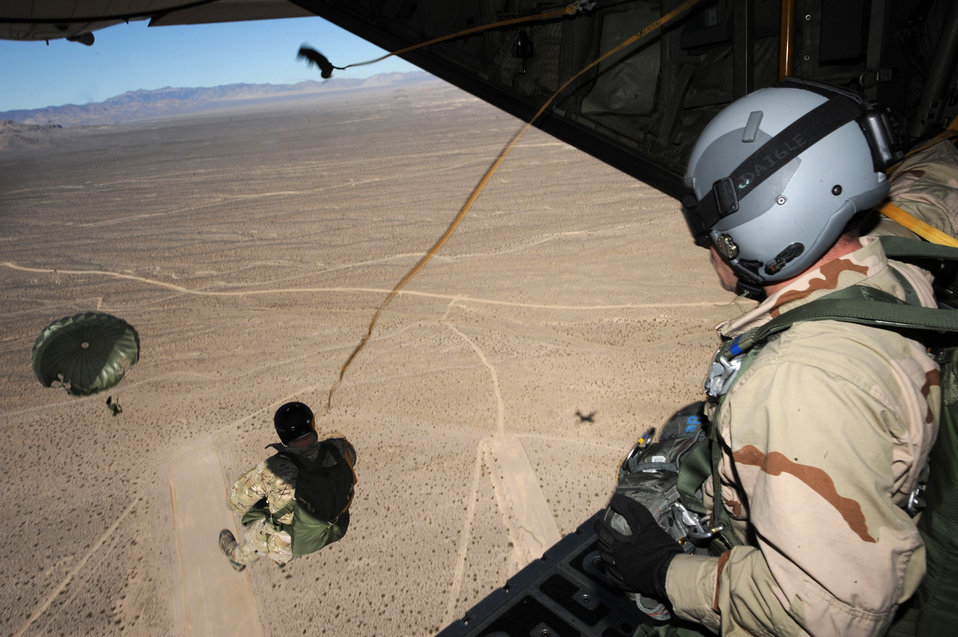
One, two, three, jump!

Pararescuemen assigned to the 58th Rescue Squadron jump from a C-130 Hercules Jan. 26, 2011, during an exercise Red Flag 11-2 training mission at Nellis Air Force Base, Nev.